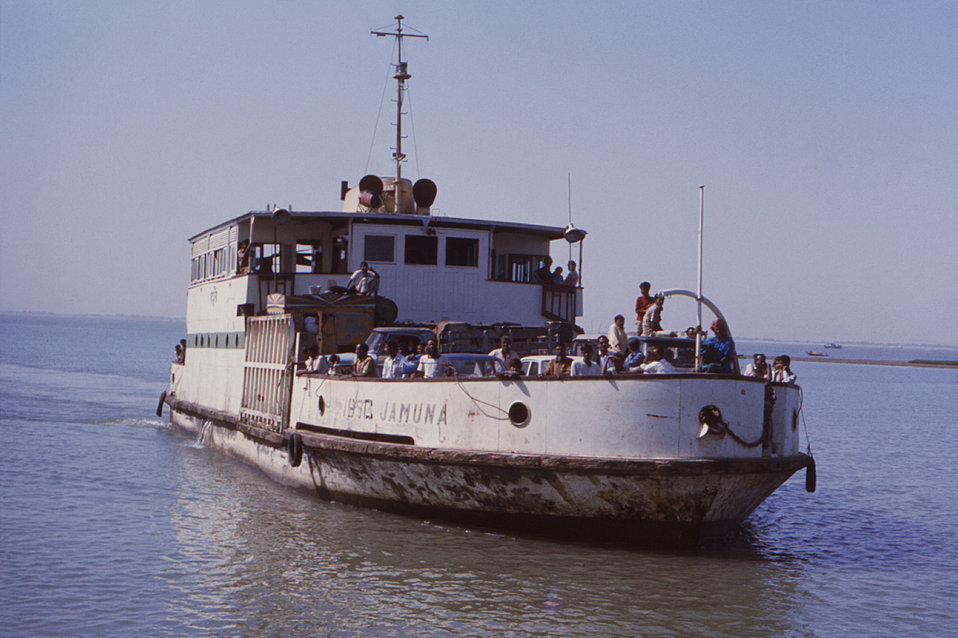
Photographed sometime in the early 1970s, during the worldwide smallpox eradication campaign, this image depicted a ferry boat on the Jamuna River in the country of Bangladesh, on its way to Rangpur, east of the District of Kurigram.